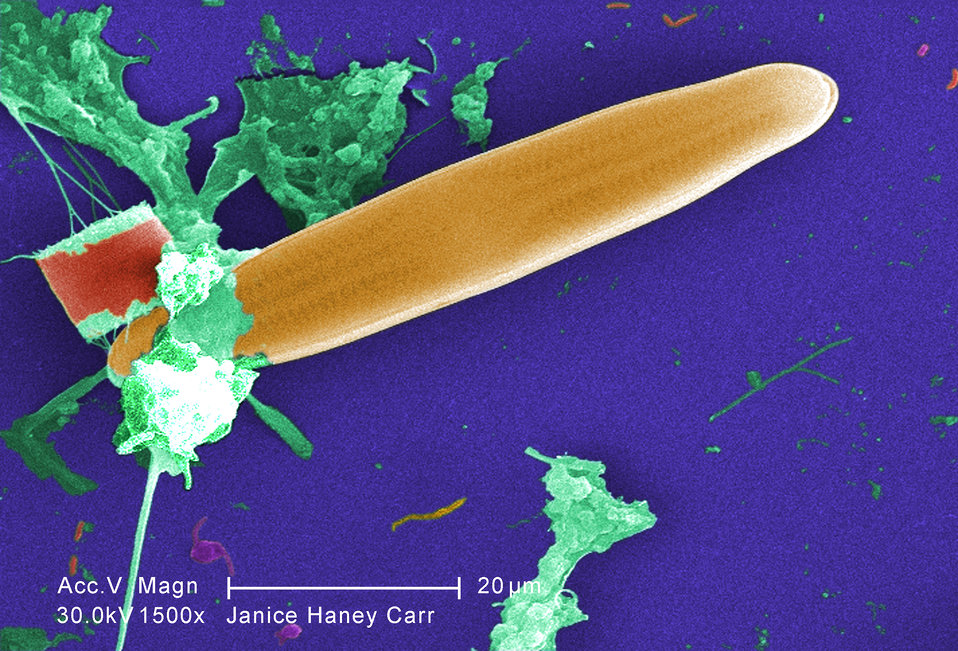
This digitally-colorized scanning electron micrograph (SEM) of an untreated water specimen extracted from a wild stream mainly used to control flooding during inclement weather, revealed the presence of unidentified organisms, which included bacteria, protozoa, and algae. Here we see what appeared to be examples of diatomic, bacterial, and protozoan species, which were but a few of the inhabitants of this fresh water stream. Note also the amorphic gelatinous biofilm within which were embedded bacteria, and amoebic microorganisms.